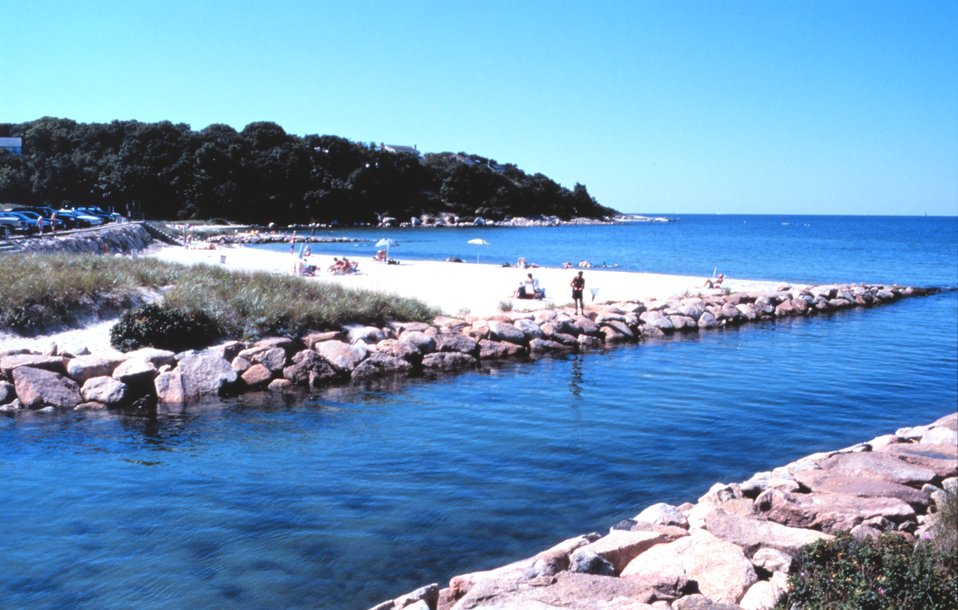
Old Silver Beach, West Falmouth